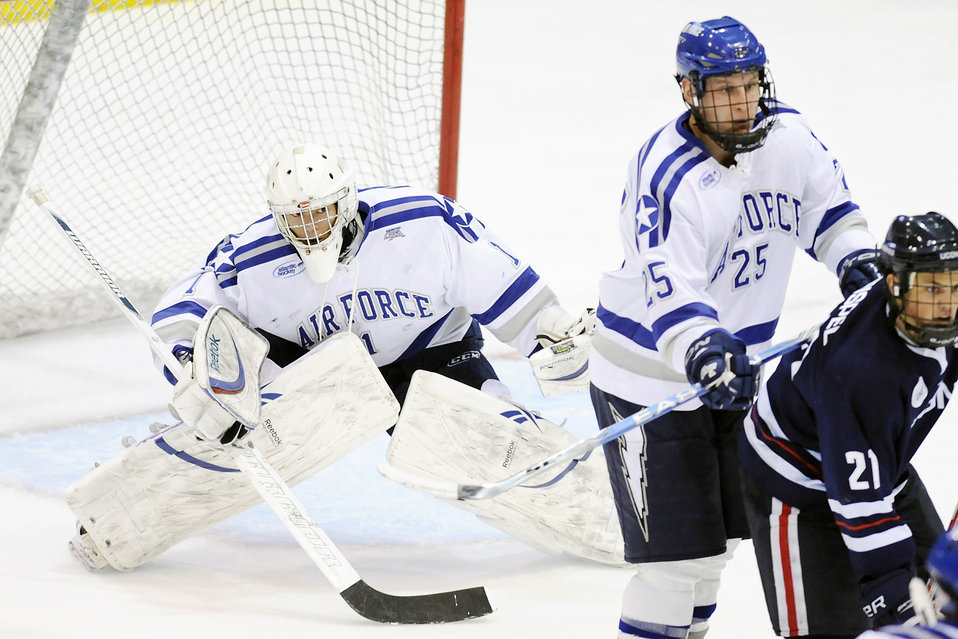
Falcons outskate UConn Huskies

Senior goalie Andrew Volkening protects the goal as Air Force beat the University of Connecticut 2-1 at the Academy's Cadet Ice Arena Jan. 8, 2010. Volkening had 24 saves on the evening. The following evening, Air Force and UConn skated to a 2-2 overtime tie.